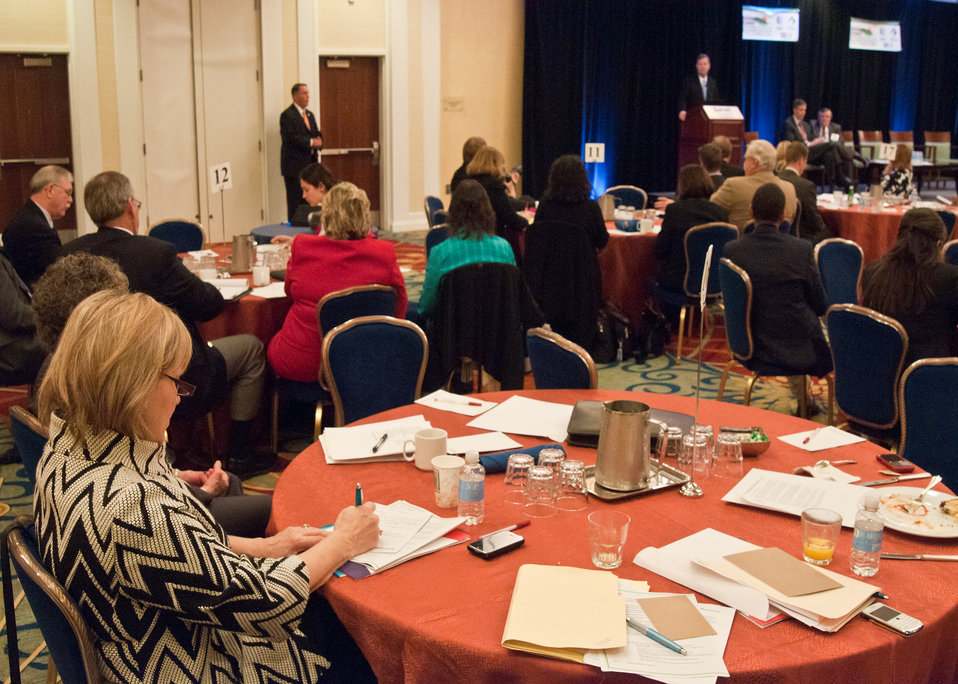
A summit participant takes notes during Agriculture Secretary Tom Vilsack’s remarks at the First National Summit on Rural Education and Economic Development held by the Education Commission of the States in Washington, DC, on Wednesday, May 4, 2011.